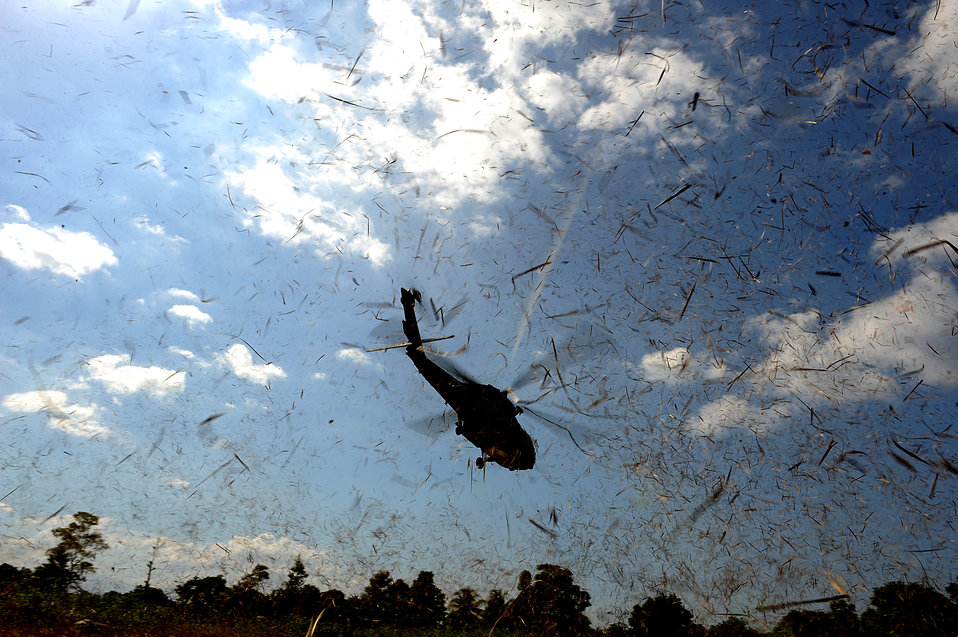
Joint team conducts drop zone survey

U.S. Air Force combat controllers and U.S. Army pathfinders take off in a U.S. Navy HH-60 Seahawk helicopter to conduct a drop zone survey outside Port-au-Prince, Haiti, Jan. 24, 2010, during Operation Unified Response.